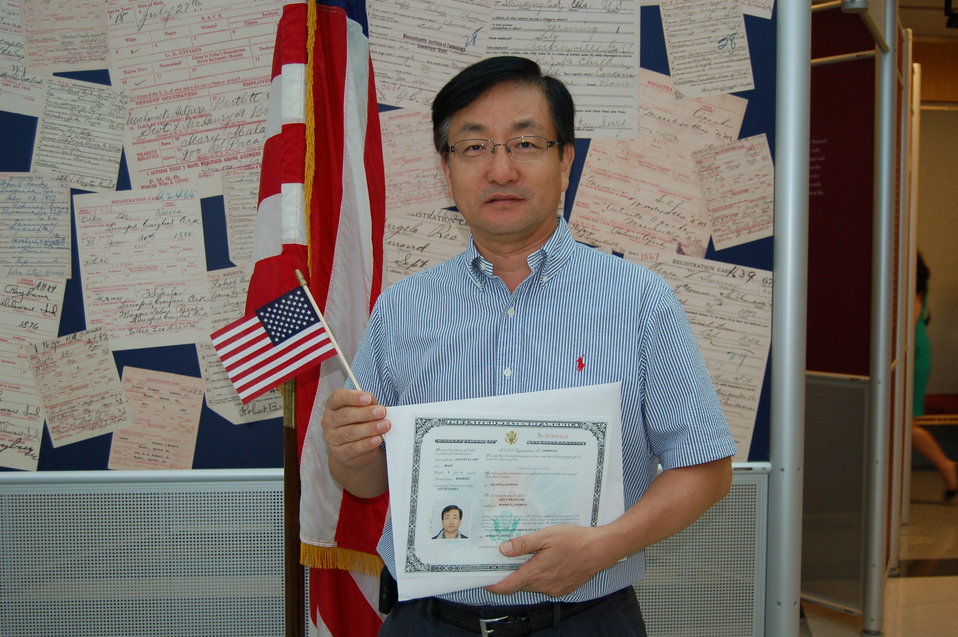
New Citizens